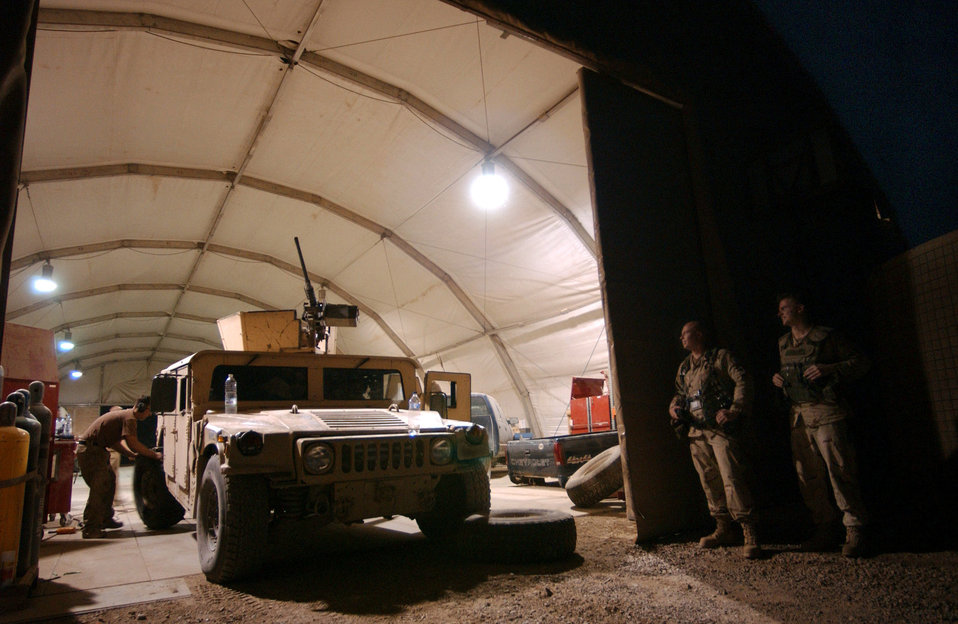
Quick service

BAGHDAD, Iraq -- Staff Sgt. Rudy Neklason (left) repairs a Humvee with a leaking tire brought in by Staff Sgt. Christopher Wardlow and Airman 1st Class Joshua Jacobsen. Within 15 minutes, Sergeant Neklason had them rolling out the door to begin their 12- to 14-hour shift. Sergeant Wardlow and Airman Jacobsen are with the 447th Expeditionary Security Forces Squadron. Sergeant Neklason is a multipurpose mechanic with the 447th Expeditionary Logistics Readiness Squadron.